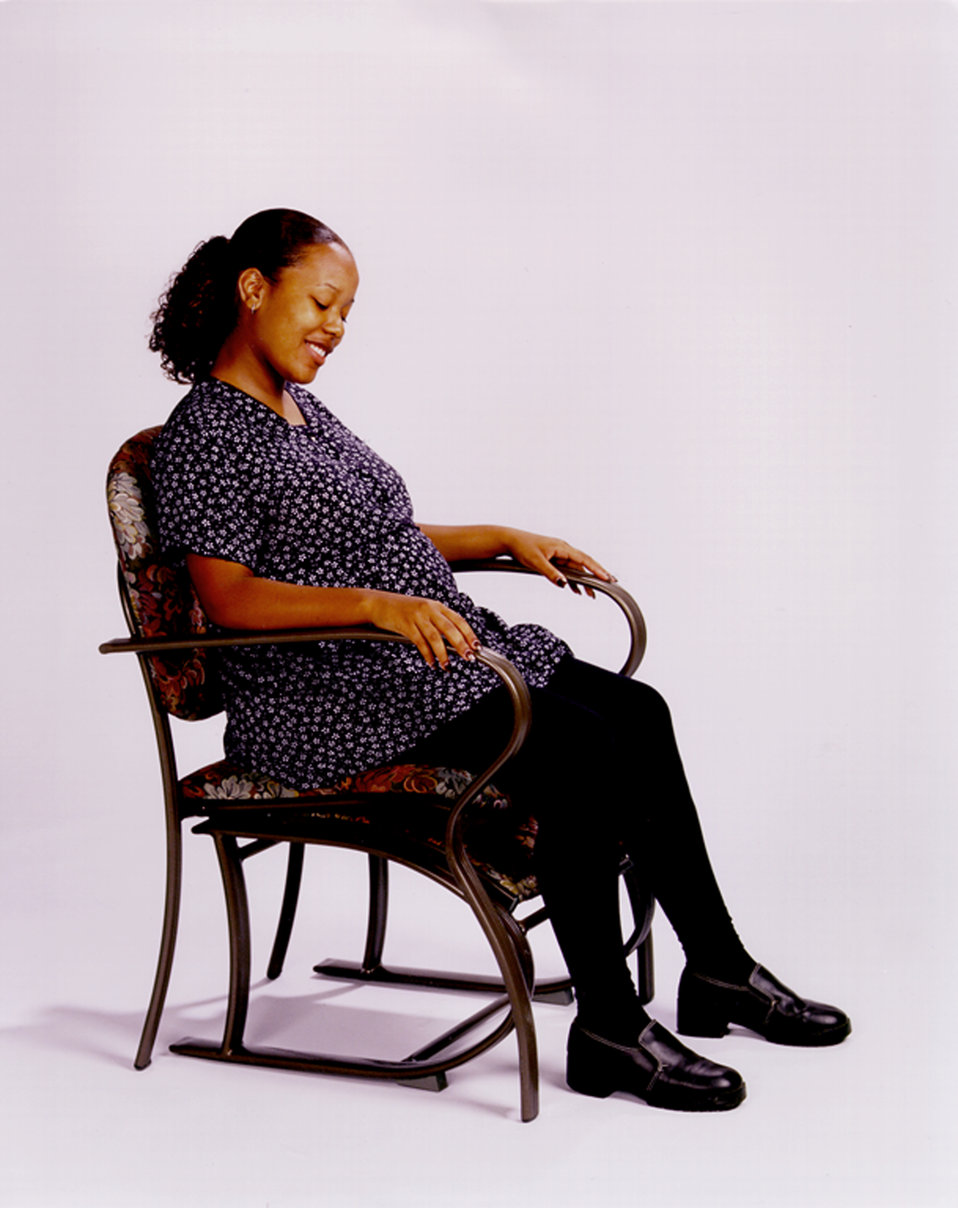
This is one of a series of ten images, (PHIL# 9144 - 9153), depicting one of LifeSpan� Furnishing's line of chairs, designed to make sitting down and rising safer and easier, and sitting more comfortable and supportive. This image showed a pregnant woman who was comfortably seated in one of these chairs. Note the footstool beneath the chair. These chairs combined aesthetics and function, and were more comfortable for most people, benefiting those who would care for others, by reducing physical exertion and stress needed when assisting others. The user could take advantage of the extended arms for stability when lowering or rising from a seated position. Close attention was paid to many small details including the non-skid rubber feet, and the elimination of pinch points and sharp edges. The LifeSpan� seating product line included four different designs, all based on an extended arm and leg concept that provided users with better leverage and support.